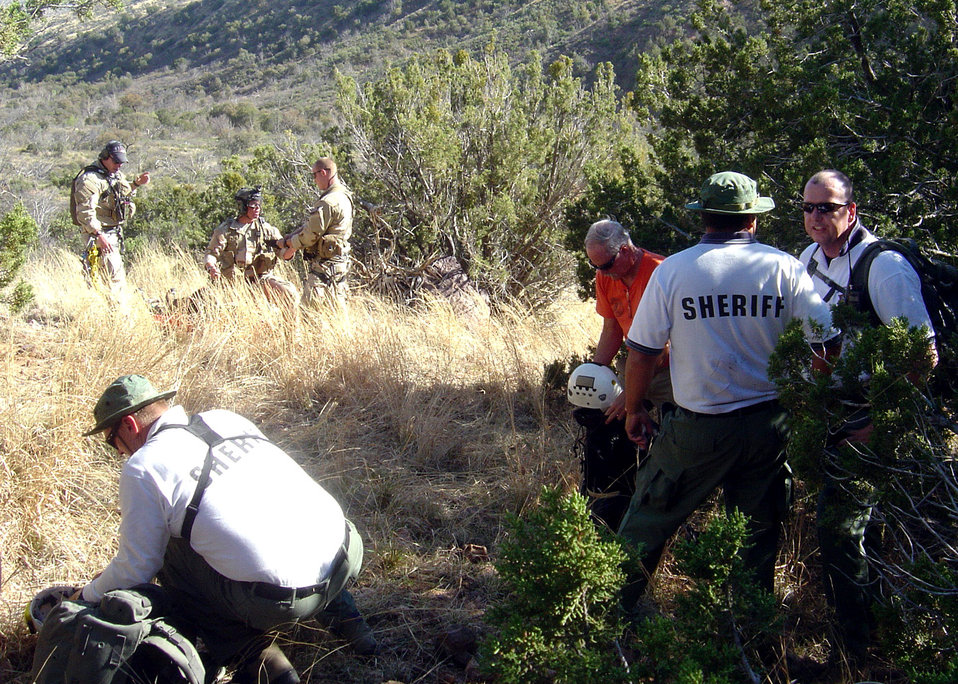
Pararescue Airmen, first responders train together in Arizona

Members of the Pima County Sheriff Search and Rescue Team, Southern Arizona Rescue Association and 48th Rescue Squadron pararescuemen from Davis-Monthan Air Force Base coordinate the evacuation of a simulated injured and lost hikers during a local civil search and rescue exercise April 2 at Coronado National Forest, Ariz.